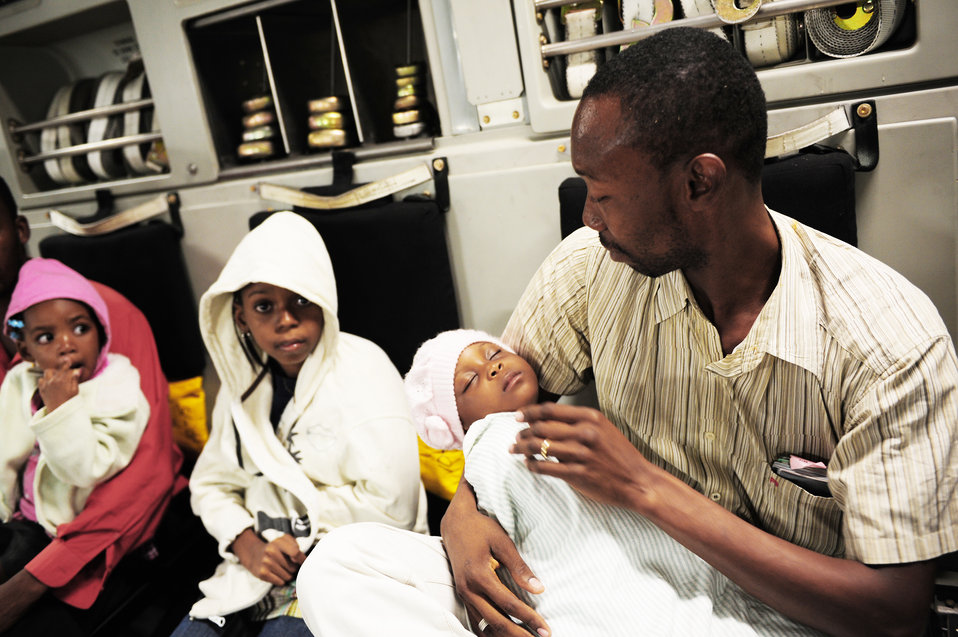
Haiti Earthquake Relief

Haitian-Americans fly on a C-17 Globemaster III Jan. 18, 2010, from Toussaint L'Ouverture International Airport in Port-au-Prince, Haiti, to Orlando Sanford International Airport, Fla. The C-17 crew is assigned to the 729th Airlift Squadron at March Air Reserve Base, Calif. The aircraft is from the 452nd Air Mobility Wing at March ARB. .